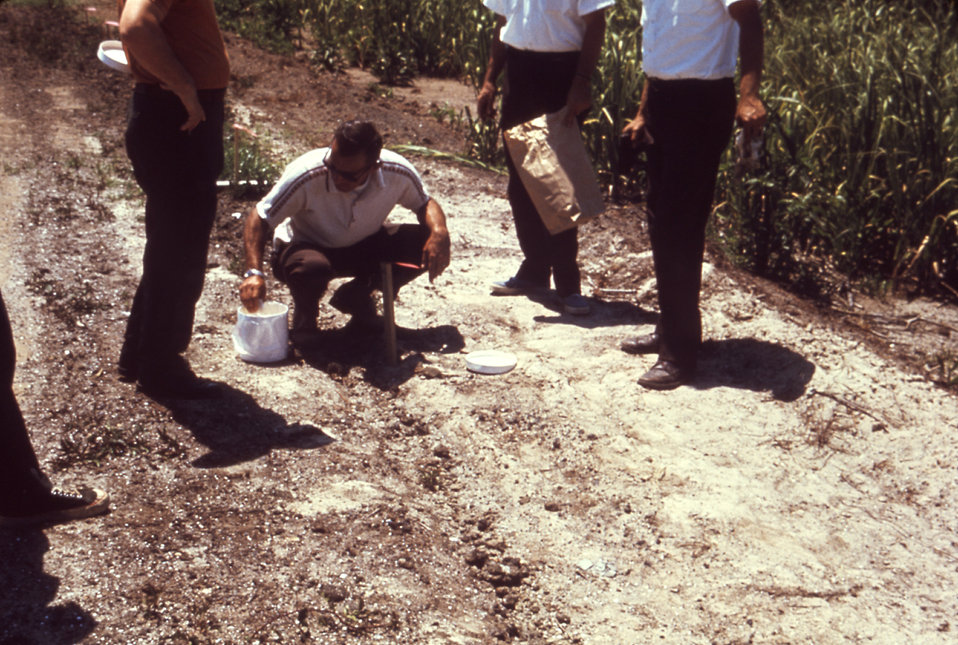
This 1981 photograph depicted a number of arboviral field technicians as they prepared collected mosquito larvae for shipping to a laboratory where they were to be counted, and classified for bioassay purposes.